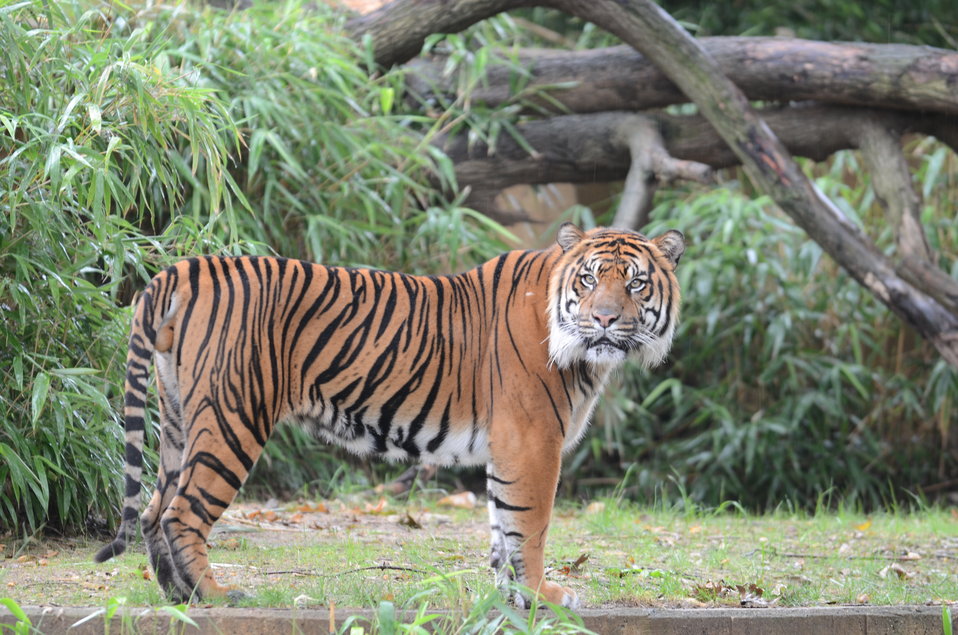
Save Vanishing Species Stamp First Day of Issue